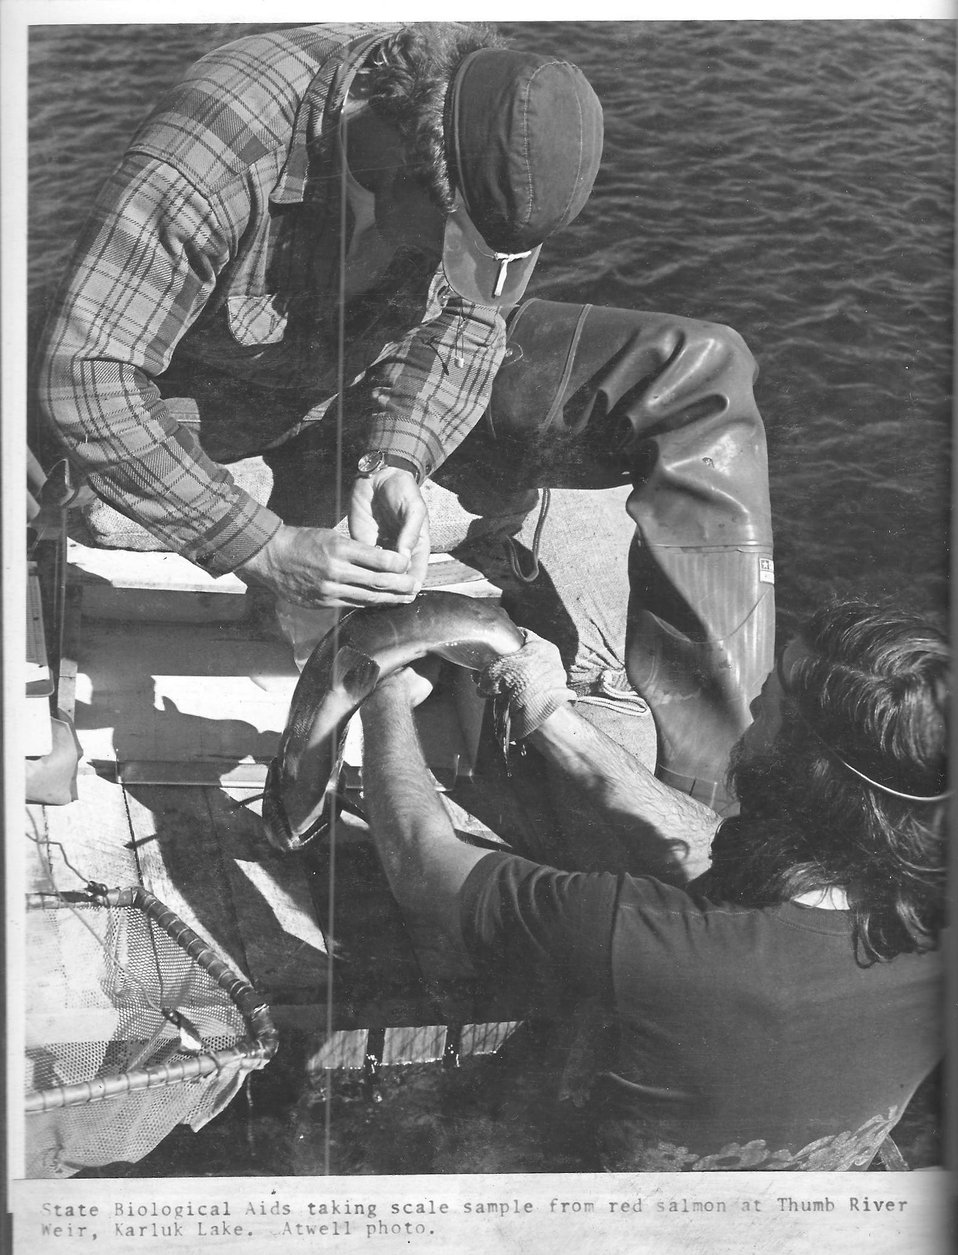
(1972) Salmon Sampling

Credit: USFWS

Source and Contact: Kodiak National Wildlife Refuge